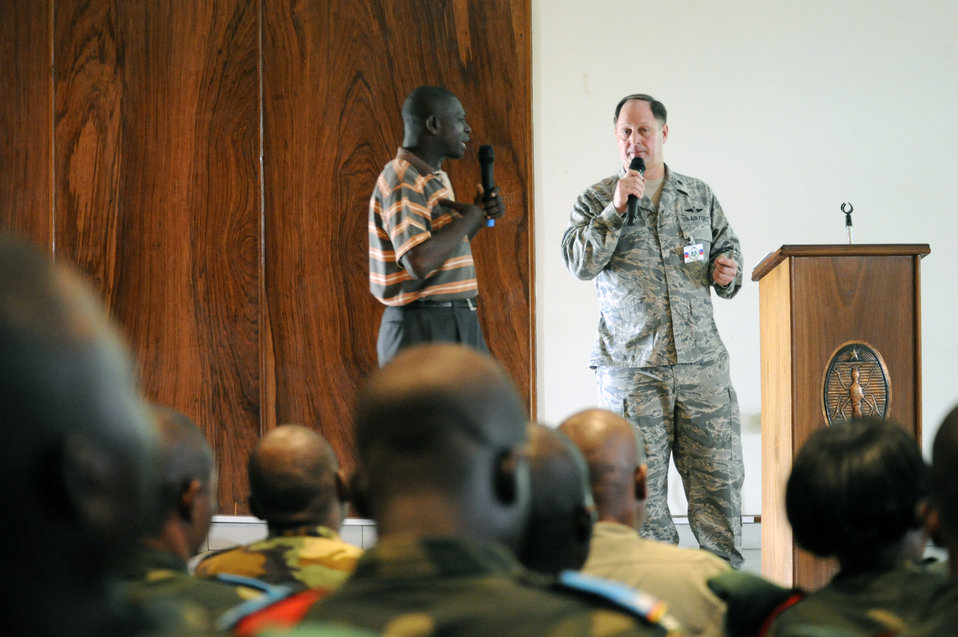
Exchanging aeromedical evacuation training across the continents

Lt. Col. Rick Vatt teaches through an interpreter to Democratic Republic of the Congo military members during MEDLITE 11, April 26, 2011, at Kinshasa, Democratic Republic of the Congo. MEDLITE 11 is a joint medical exercise focused on aeromedical evacuation, to improve the readiness of U.S. Air Force and DRC personnel. Colonel Vatt is the chief of aerospace medicine of the North Carolina Air National Guard's 145th Airlift Wing.